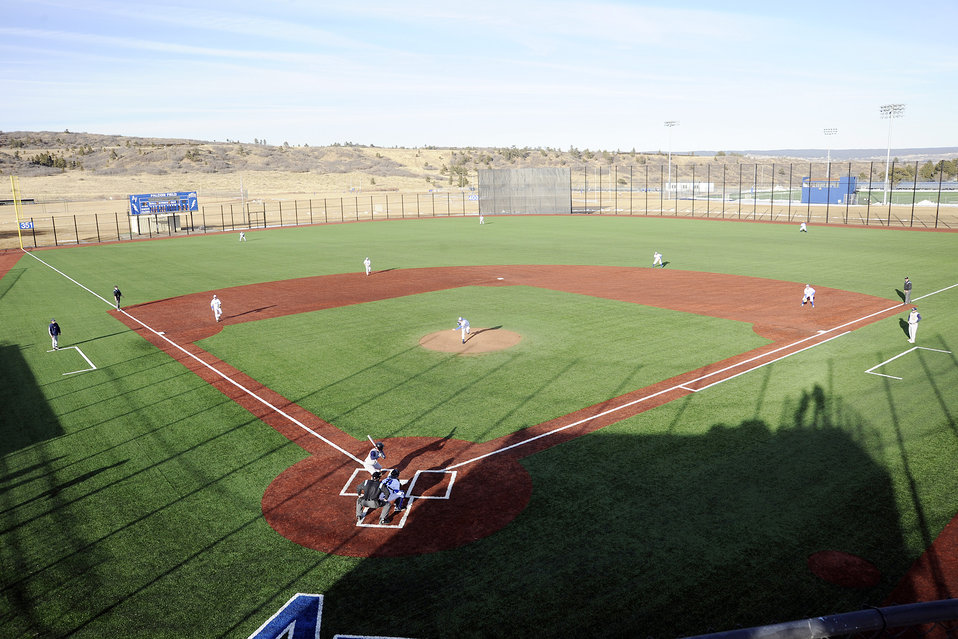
Falcons win baseball home opener

The newly renovated Falcon Field at the U.S. Air Force Academy hosted Colorado Christian in the Falcons home opener March 2, 2010. The new playing surface consists entirely of synthetic Field Turk except for the pitching mound. Air Force beat Colorado Christian 15-5.